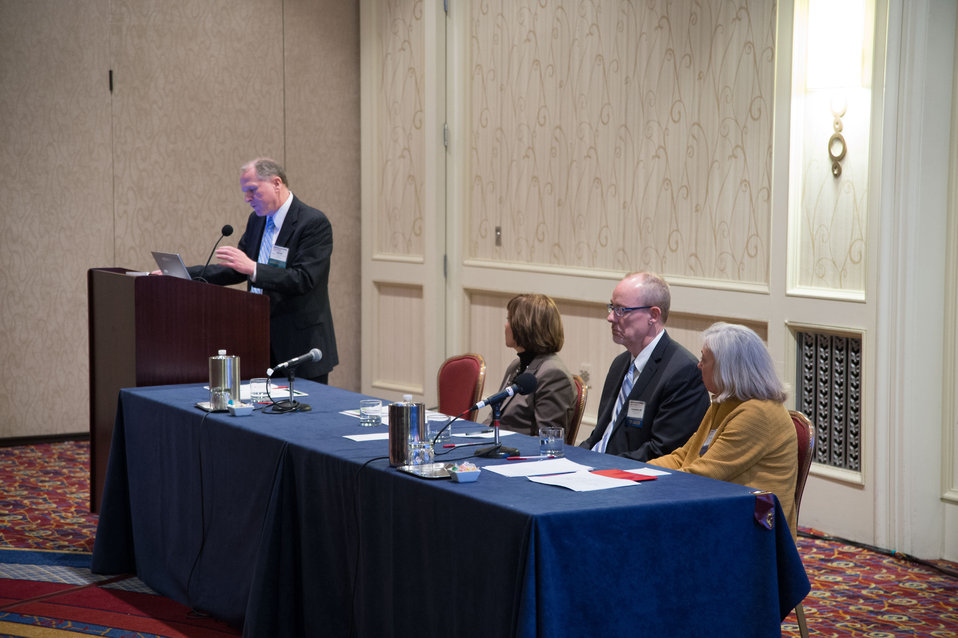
U.S. Department of Agriculture (USDA) Animal and Plant Health Inspection Service (APHIS) Administrator Kevin Shea moderates the panel on Protecting U.S. Animal and Plant Health from Invasive Pests at the 2014 Agricultural Outlook Forum on Thursday, Feb. 20, 2014 in Arlington, VA. The panel discussed how USDA is protecting U.S. agricultural health from invasive pests in times of diverging stakeholder interests and constraining resources. The session focused on USDA’s collaborative work with States, industries, and international trade. (L to R Secretary of California Department of Food and Agriculture Karen Ross, Mountain Farms Incorporated Health Services Director G. Donald Ritter, and U.S. Department of Agriculture (USDA) Under Secretary for Farm and Foreign Agricultural Service (FFAS) Senior Counselor Suzanne Heinen). The U.S. Department of Agriculture's (USDA) annual Agricultural Outlook Forum brings together the agricultural community to discuss policy, trade, science, rural development, and the economic outlook for the coming year. The Forum also focuses on forestry, health and nutrition issues, and the changing dynamics and face of rural America.